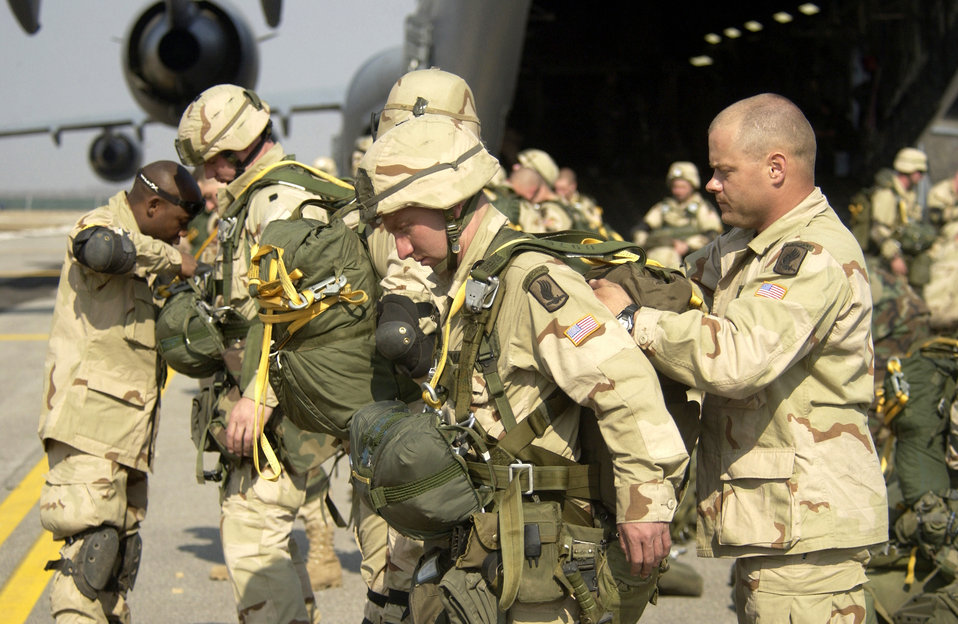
Army, Air Force troops move out

OPERATION IRAQI FREEDOM -- U.S. Army paratroopers and U.S. Air Force tactical air controllers from the 173rd Airborne Brigade board a U.S. Air Force C-17 Globemaster III on March 26 and prepare to move forward from an air base in Europe to participate in Operation Iraqi Freedom.